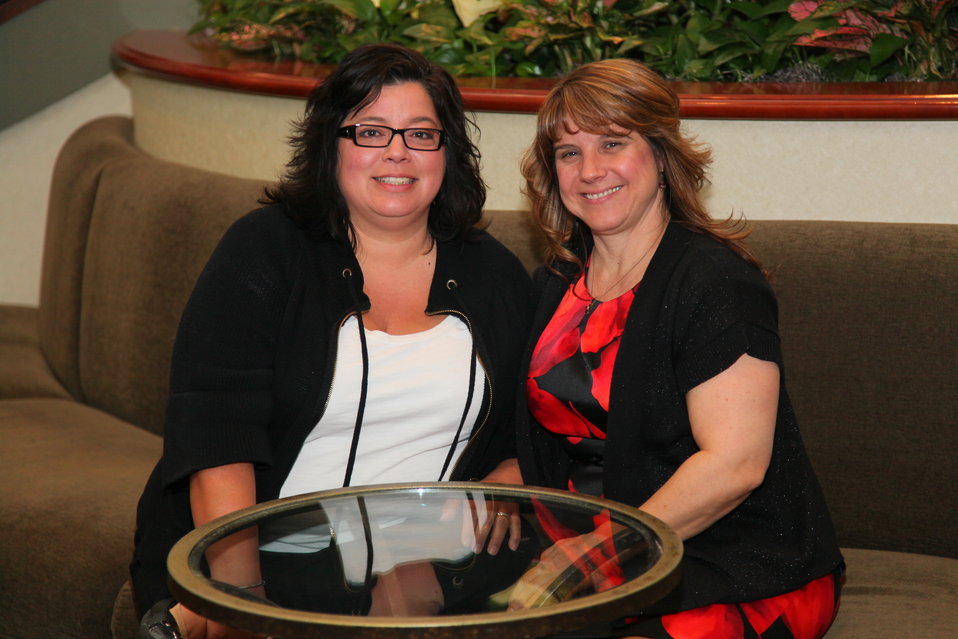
Sacramento District Holiday Party 2011